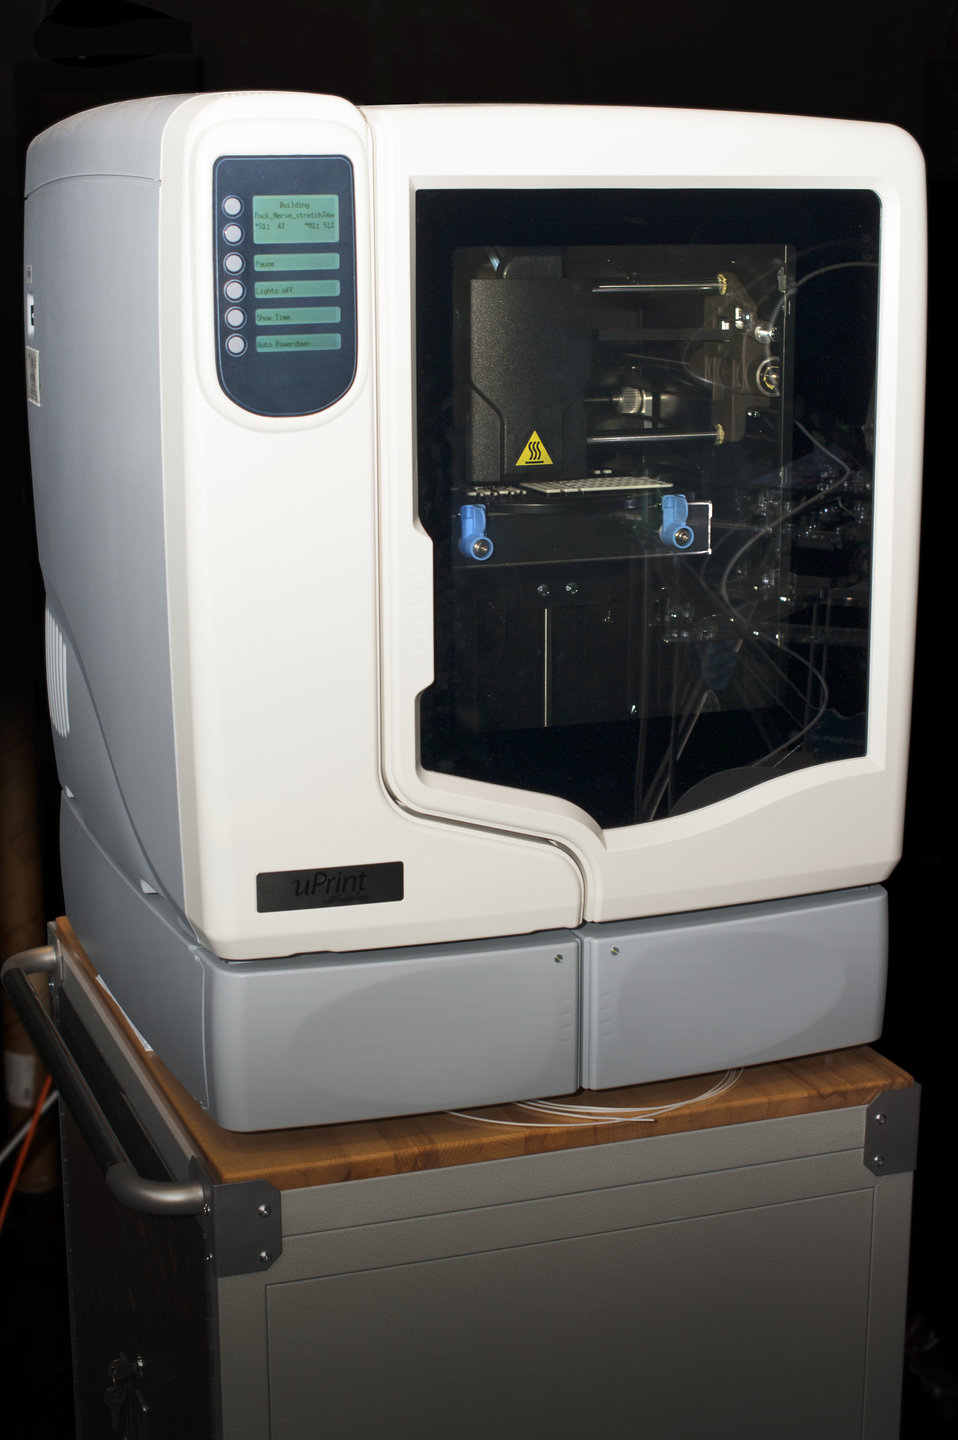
3-D Printing at FDA (8182)

Research engineers use this 3-D printer in their work at FDA. 3-D printing—the process of making a three-dimensional solid object of virtually any shape from a digital model—is spurring innovation in manufacturing, dramatically reducing the time required to design new products and allowing designs to be built that were not possible before. At FDA, we’re using it to expand both our research and our review of new and innovative medical products. To learn more, read this FDA Voice blog post:

• FDA Goes 3-D